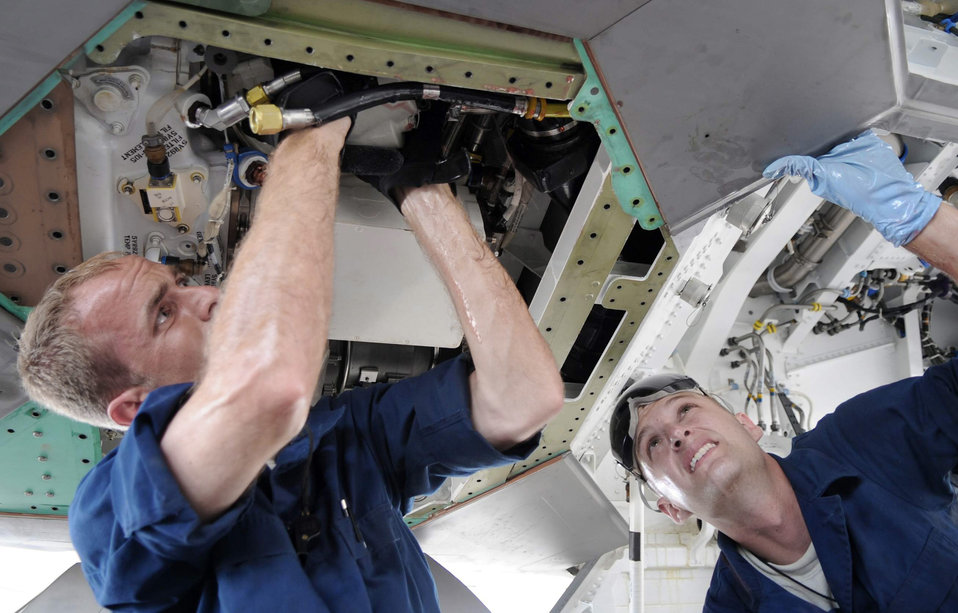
Maintainers keep F-22s ready in Guam

Staff Sgt. Jeremiah Smith and Senior Airman Theodore Cupp perform maintenance on a hydraulic pump June 3. The Airmen are Raptor crew chiefs assigned to the 525th Expeditionary Aircraft Maintenance Unit deployed to Andersen Air Force Base, Guam from Elmendorf Air Force Base, Alaska, in support of U.S. Pacific Command's Theatre Security Packages.